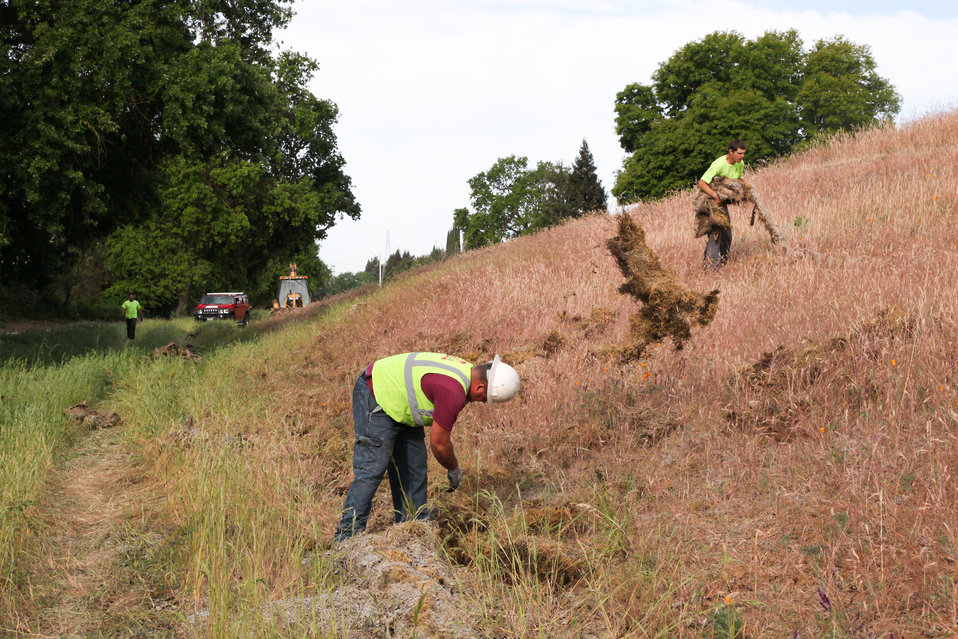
Removing straw wattles

Construction workers for the U.S. Army Corps of Engineers Sacramento District remove decomposed straw-netting April 19, 2013 along the American River in Sacramento, Calif. The rolls of straw, called wattles, were put in place to help native grasses take hold on the newly refurbished levee during the winter rains. Their removal is one of the final steps in restoring this reach to its pre-construction condition. More than 4,000 feet of this levee was reinforced and raised an average of one foot to safely pass more water coming from Folsom Dam and its auxiliary spillway, currently under construction and slated for completion in October 2017.